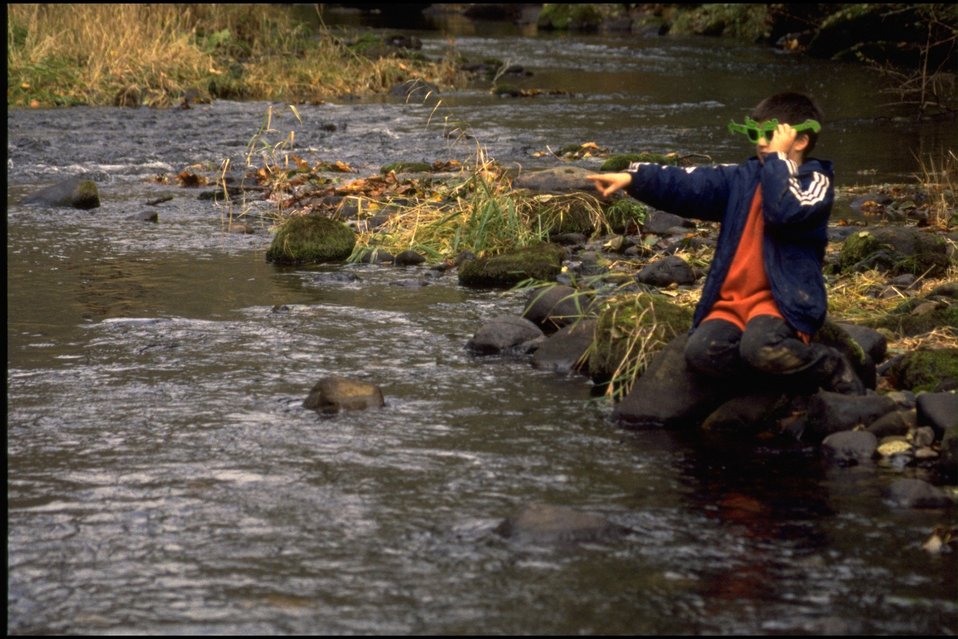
Salmon Watch Program (Fish Creek) - Crow/Applegate Schools.